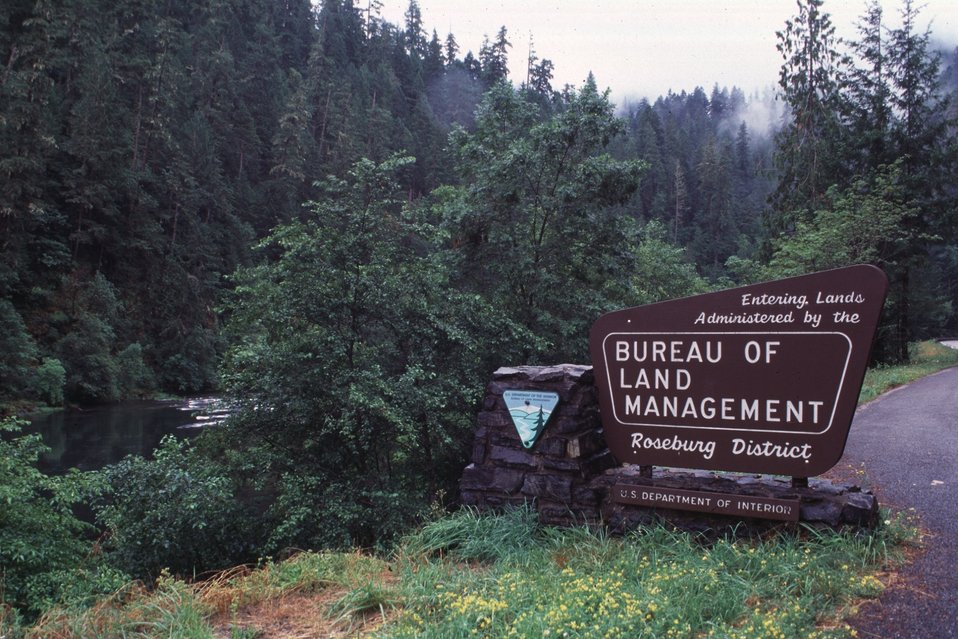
BLM sign for the Roseburg District.